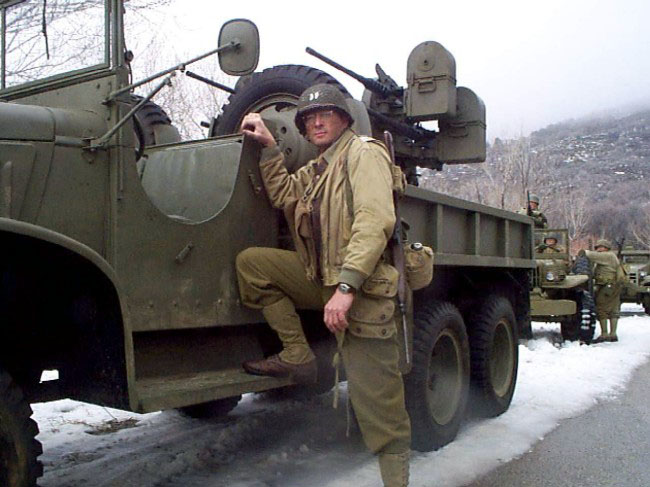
Hollywood major

SCHRIEVER AIR FORCE BASE, Colo. (AFPN) -- Maj. Allen Maj. Allen Vickrey stands beside a vintage World War II artillery jeep on the set of